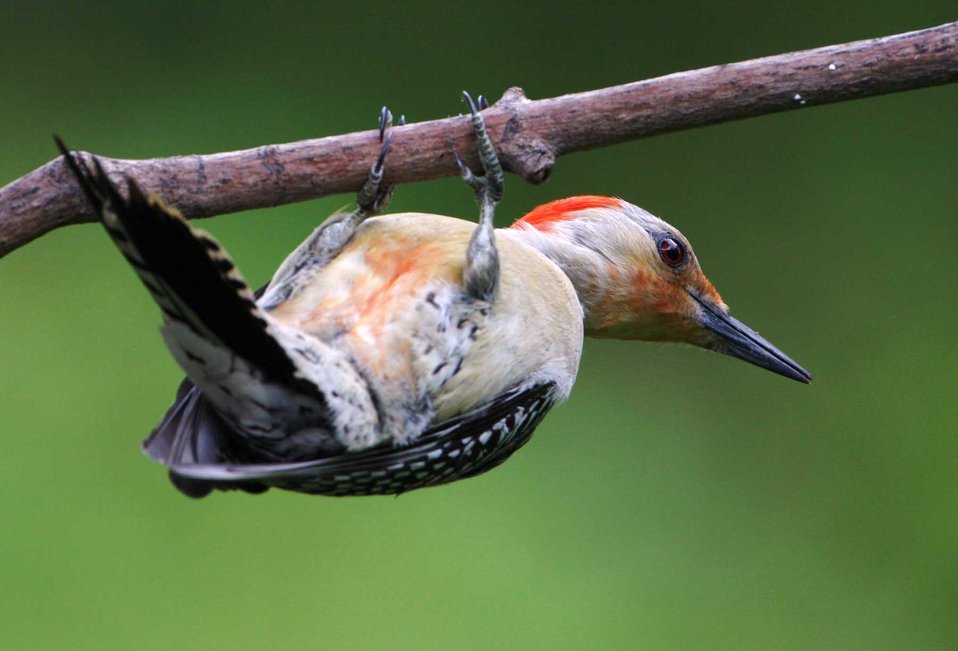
Red-bellied woodpecker at John Heinz National Wildlife Refuge in Philadelphia, Pennsylvania.